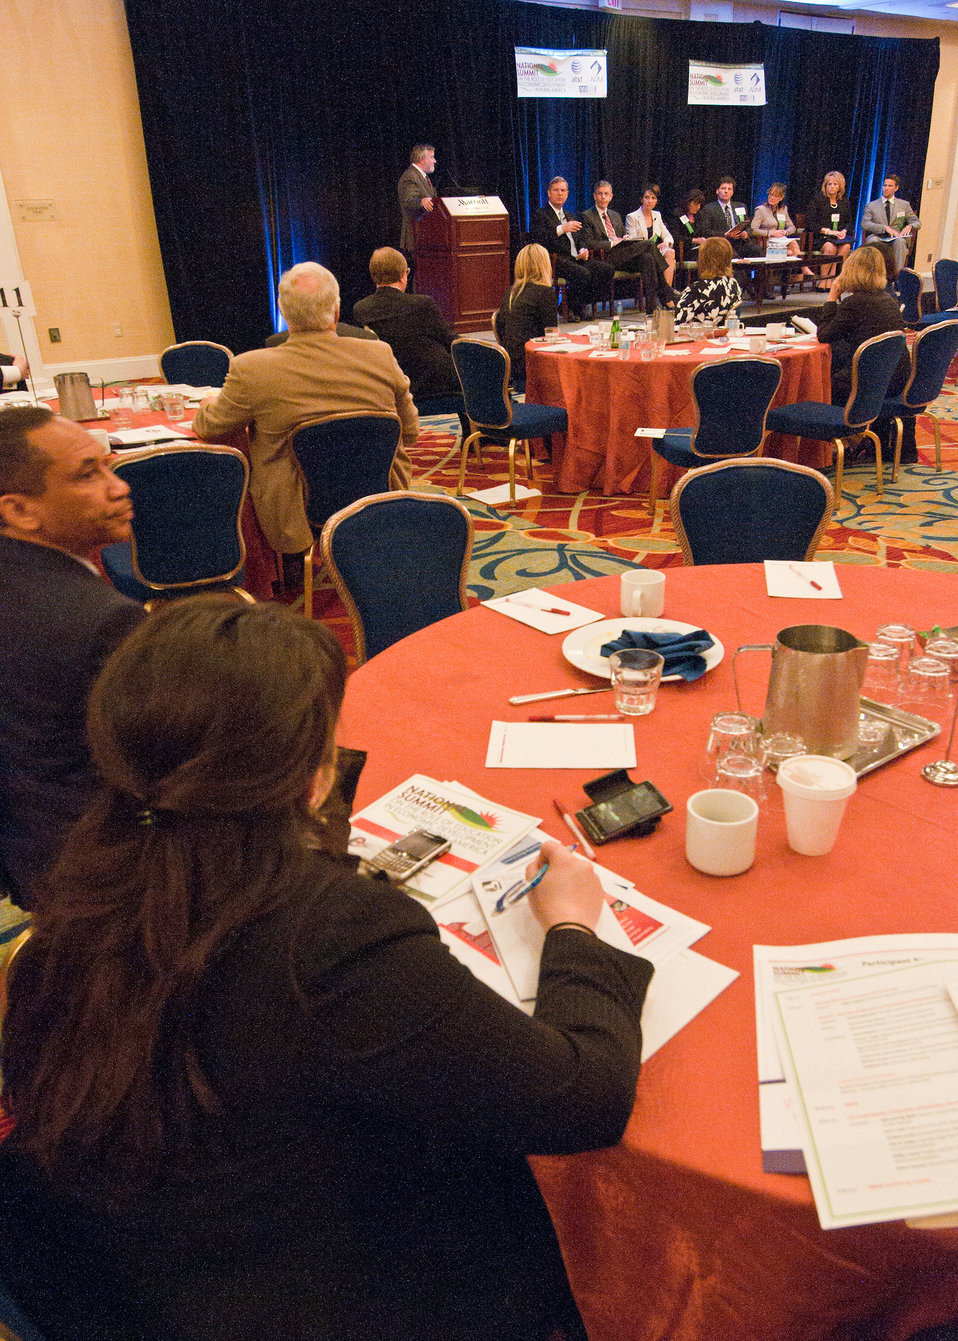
A summit participant takes notes during Agriculture Secretary Tom Vilsack’s remarks at the First National Summit on Rural Education and Economic Development held by the Education Commission of the States in Washington, DC, Wednesday, May 4, 2011.